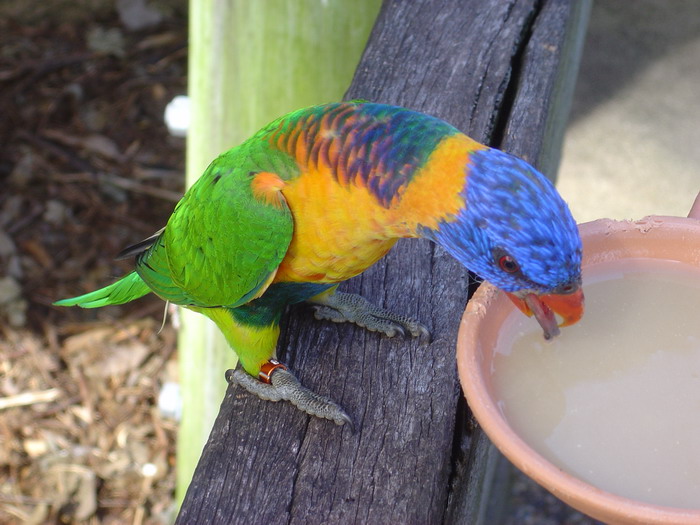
Rainbow Lorikeet Photo taken at Dreaworld, Gold Coast, Queensland Australia Author: Rok Krope